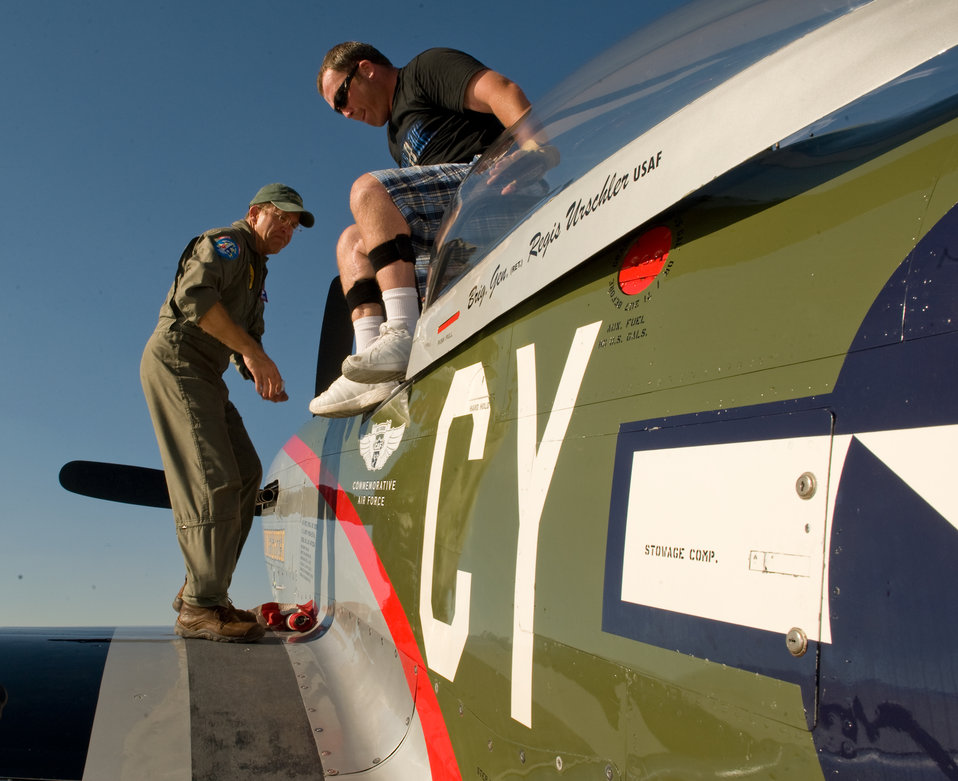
Warrior Flight